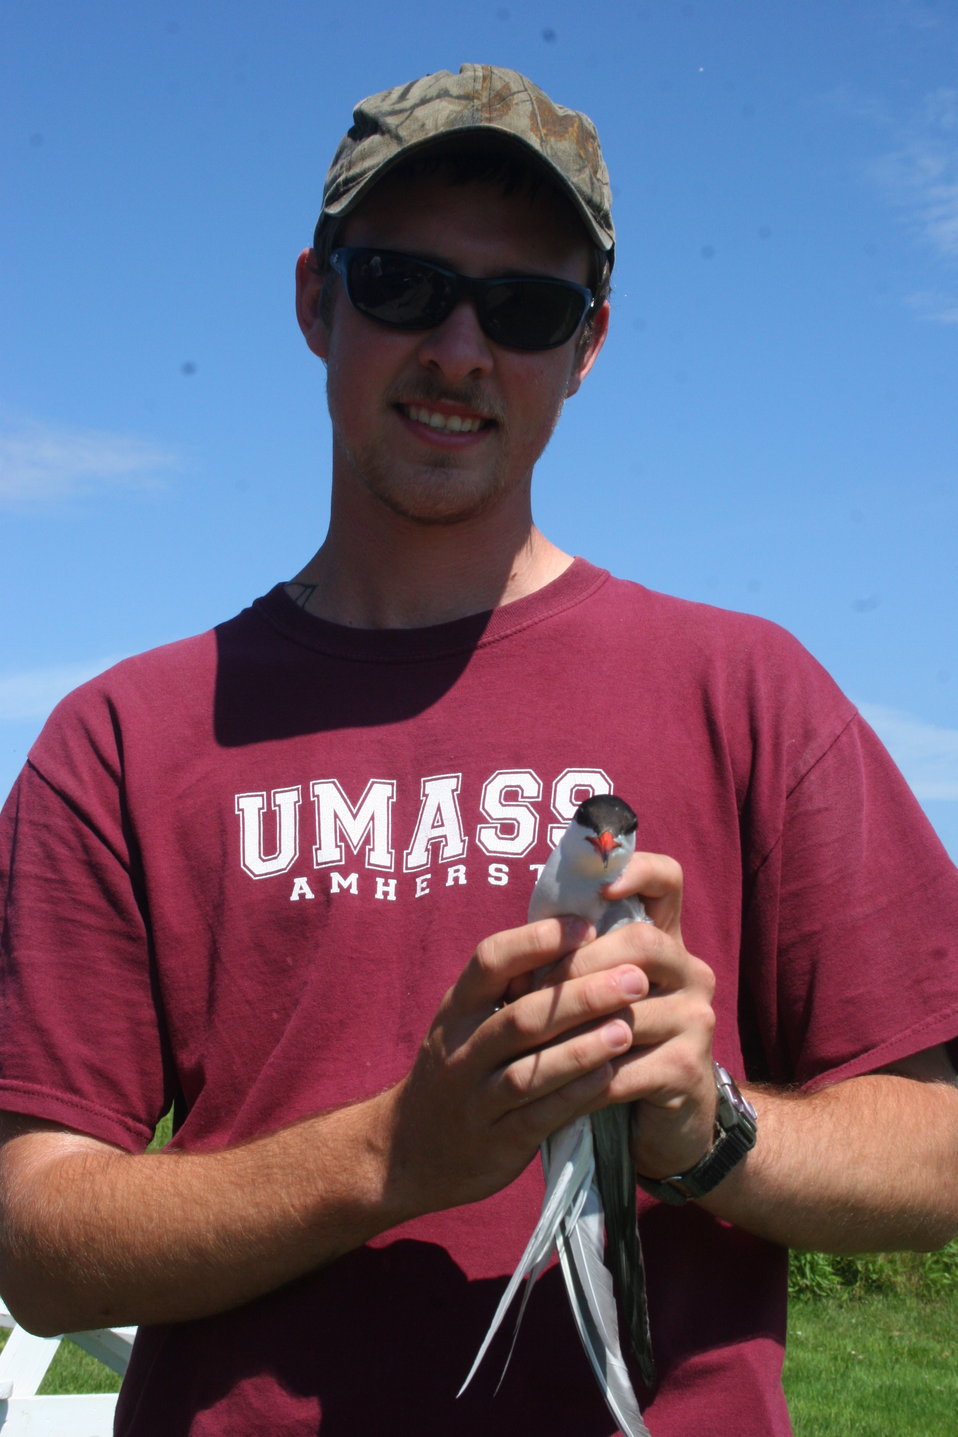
FWS Contractor Holding Tern